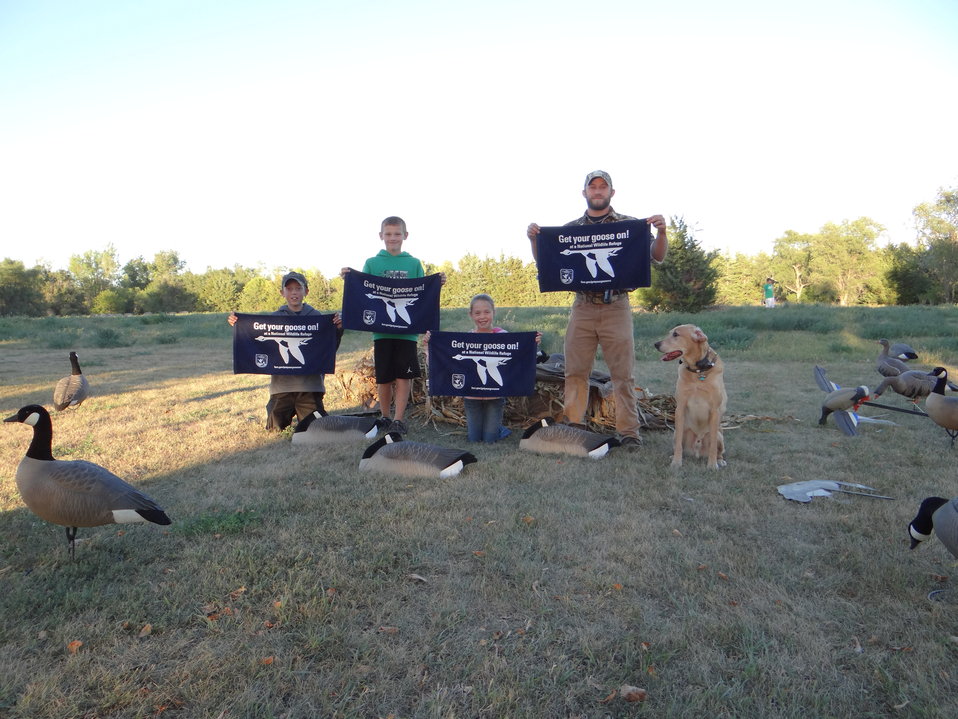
Get Your Goose On!

2013 Huron WMD Youth Waterfowl Hunt. 'Get your Goose On!' How to session on setting your decoy spread and hunting dog demonstration. The Huron Wetland Management District hosted its 10th annual Youth Waterfowl Hunt in September. This event provided 28 youth hunters between the ages of 12 – 15 and (new) mentored hunters (10-11), an opportunity to learn about various migratory birds and their habitats, duck and goose calling, decoys, and waterfowl hunting techniques. This event continues to be a success each year due to the dedicated volunteers within the community of Huron.